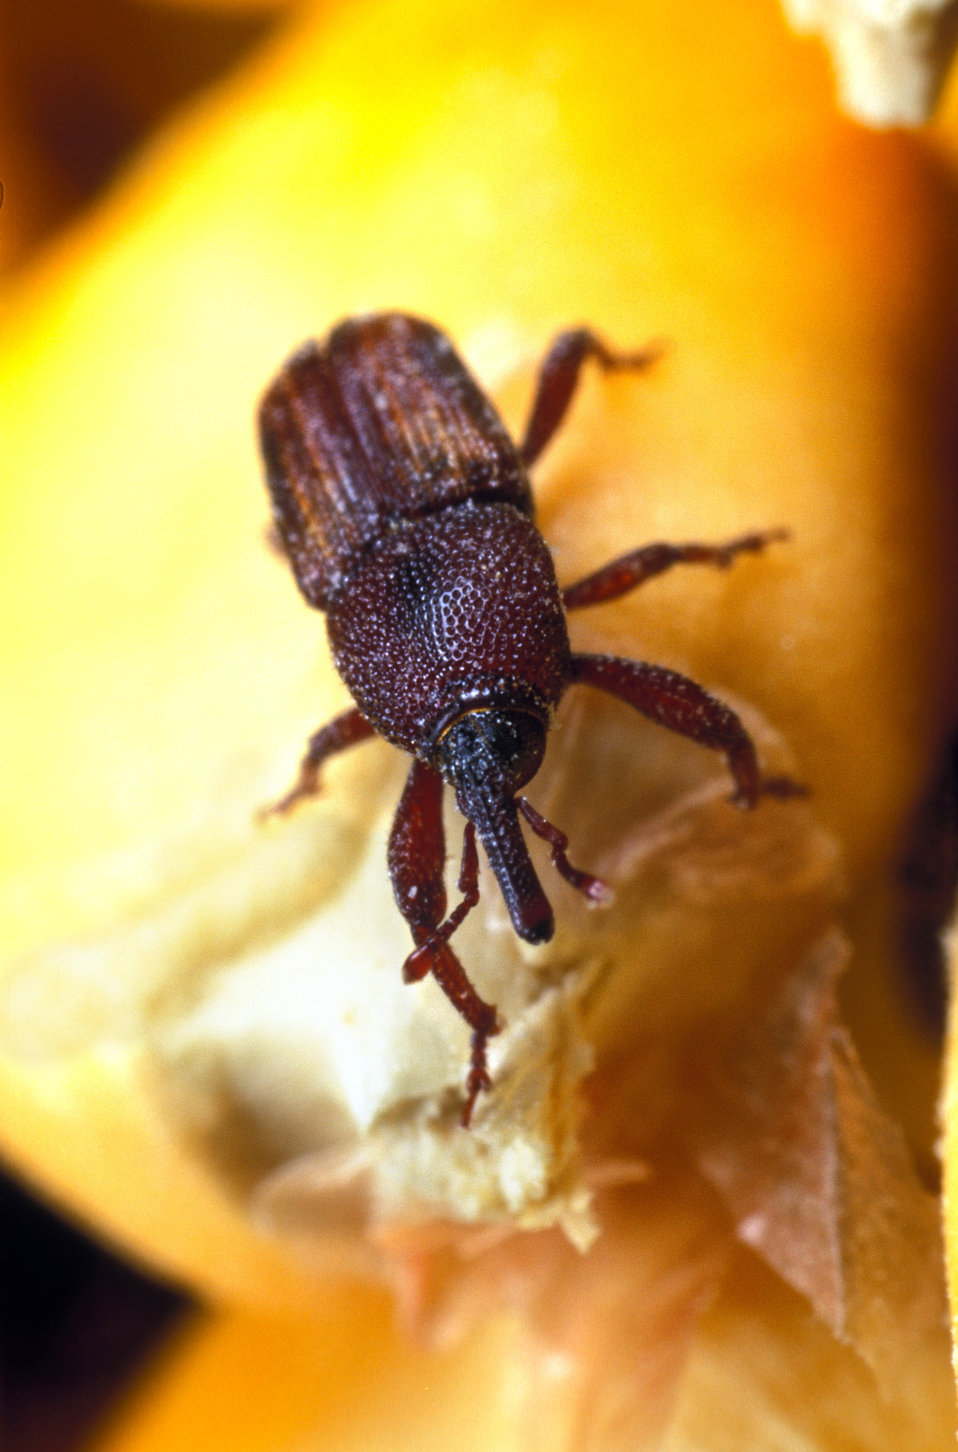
The Maize weevil (Sitophilus zeamais) is known in the U.S. as the greater rice weevil. This insect attacks both standing crops and stored cereal products, such as wheat, rice, sorghum, oats, barley, rye, buckwheat, peas, and cottonseed. The maize weevil also infests other types of stored, processed cereal products such as pasta, cassava, and various coarse, milled grains.